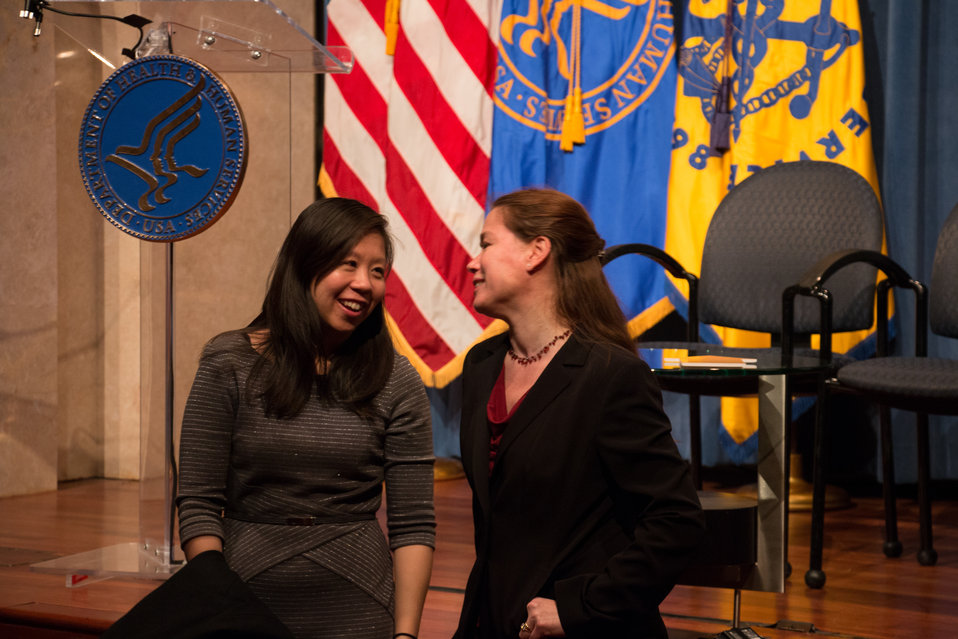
VHAP Launch (430 of 511)